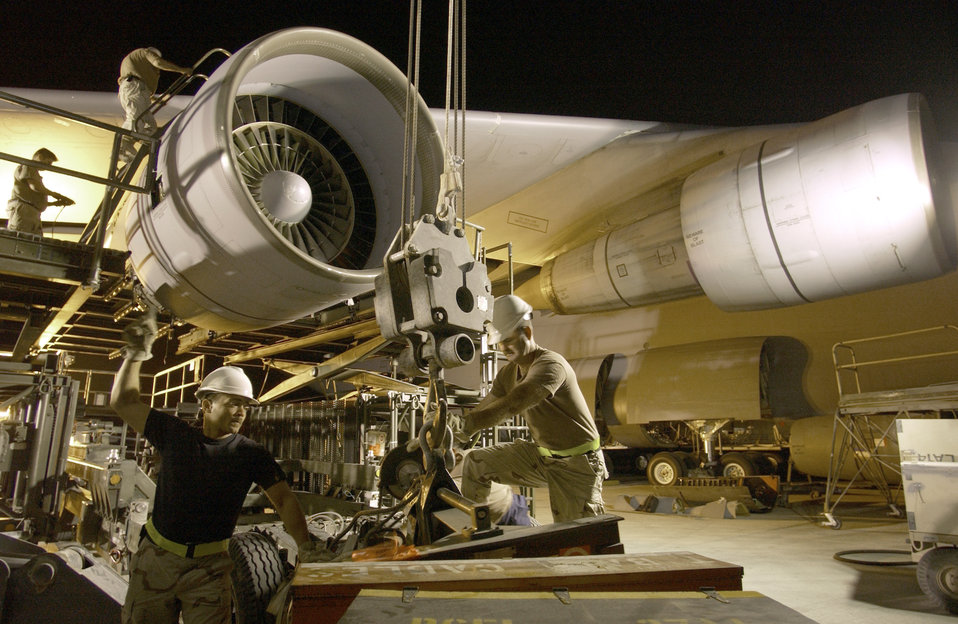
Big engine trouble

SOUTHWEST ASIA -- Airmen with the 8th Expeditionary Maintenance and 379th Expeditionary Civil Engineer Squadrons remove the No. 4 engine from a C-5 Galaxy at a forward-deployed location here Jan. 14. The Galaxy landed with three engines after it had an in-flight emergency during take off from Baghdad International Airport. Initial reports indicate the incident was the result of hostile action from the ground.